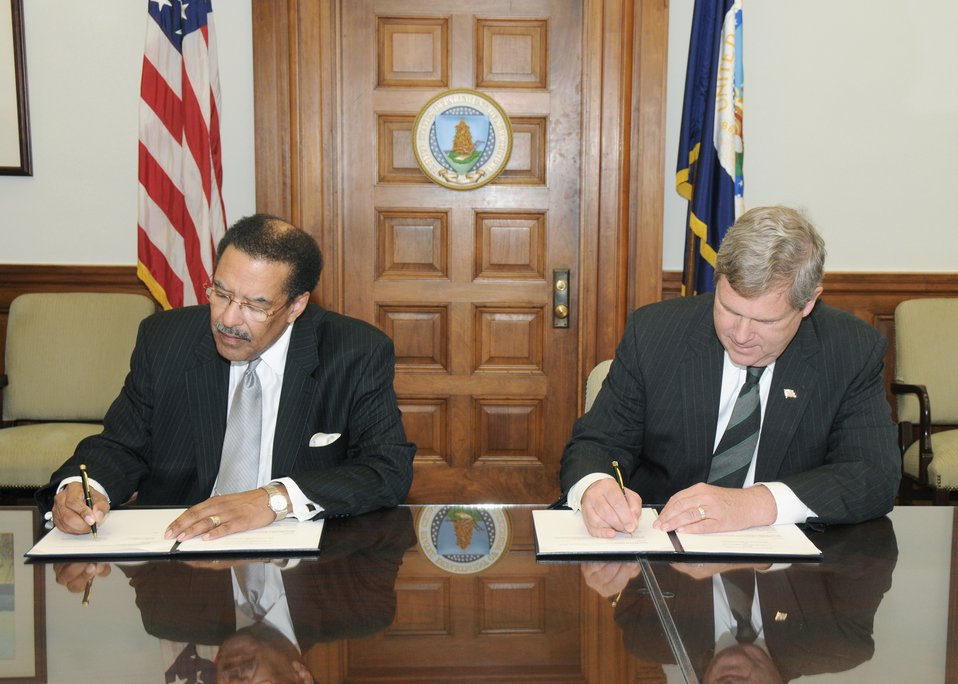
President of West Virginia State University and Co-Chair the U.S. Department of Agriculture 1890’s Task Force Dr. Hazo Carter, Jr. and Agriculture Secretary Tom Vilsack sign a Memorandum of Understanding (MOU) between the 1890’s Land Grant Colleges and Universities and the U.S. Department of Agriculture on Wednesday, May 12, 2010. USDA photo 10di1357-05